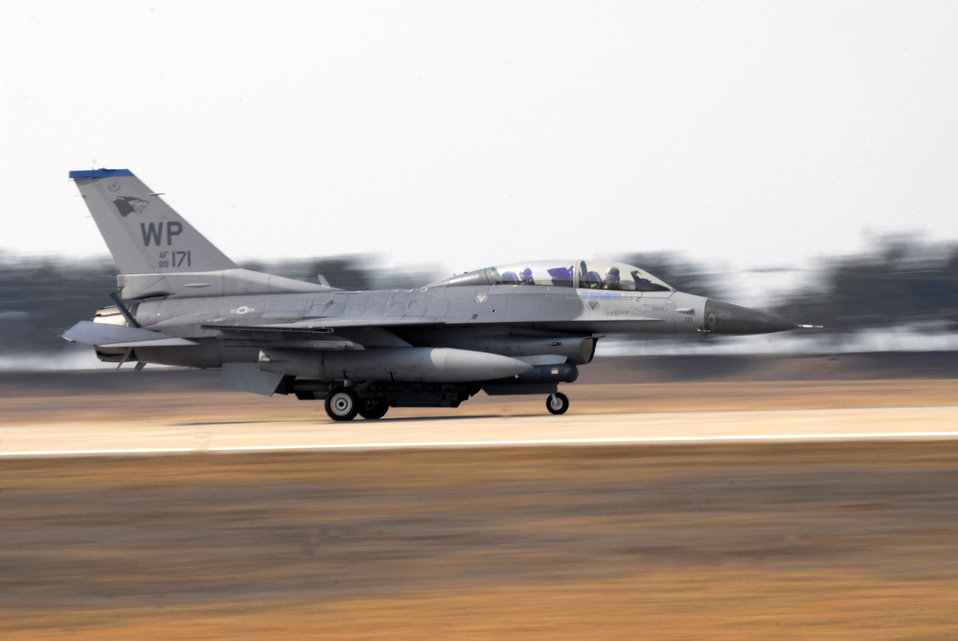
Korean VIP goes for a ride

Kim Myung Jung, Gunsan City's Korean National Police chief, takes a high-speed taxi run at Kunsan Air Base, Republic of Korea March 4 in an F-16 Fighting Falcon piloted by Col. J.D. Harris, 8th Fighter Wing commander. Mr. Kim visited the base while participating in Kunsan's Pilot for a Day program.